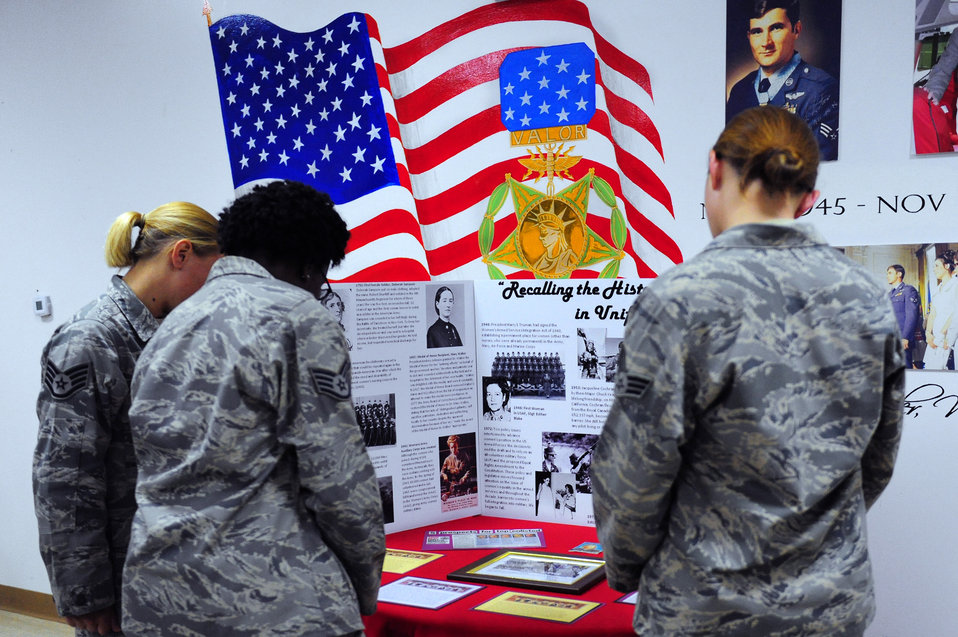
Women's History Month: Recalling women in uniform

Posters of females in the U.S. military were placed throughout the room during the 380th Air Expeditionary Wing Women's History Month symposium luncheon March 28 at an air base in Southwest Asia. The theme,